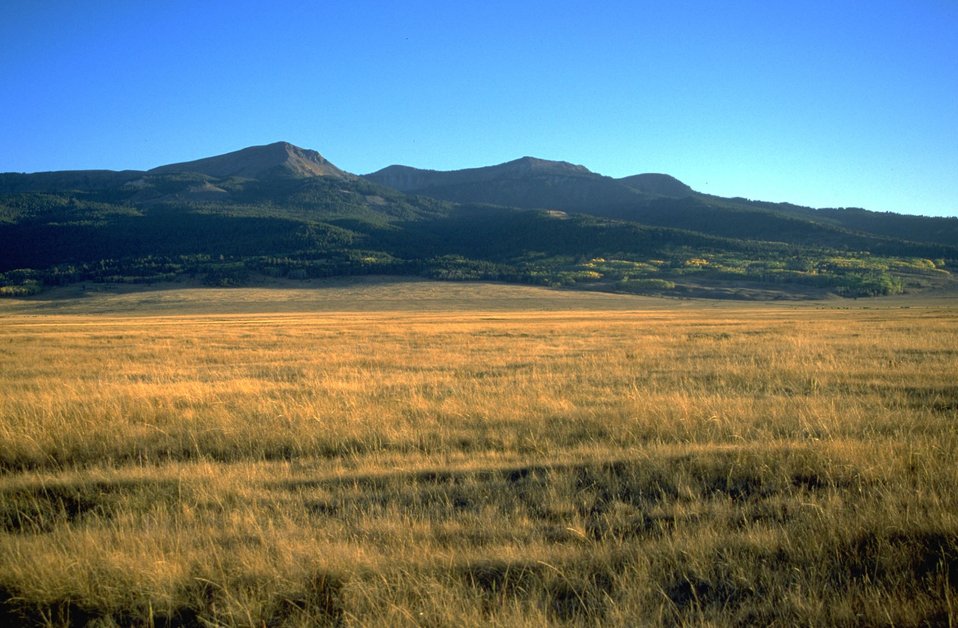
Centennial Valley grassland with Centennial Mountains in the background